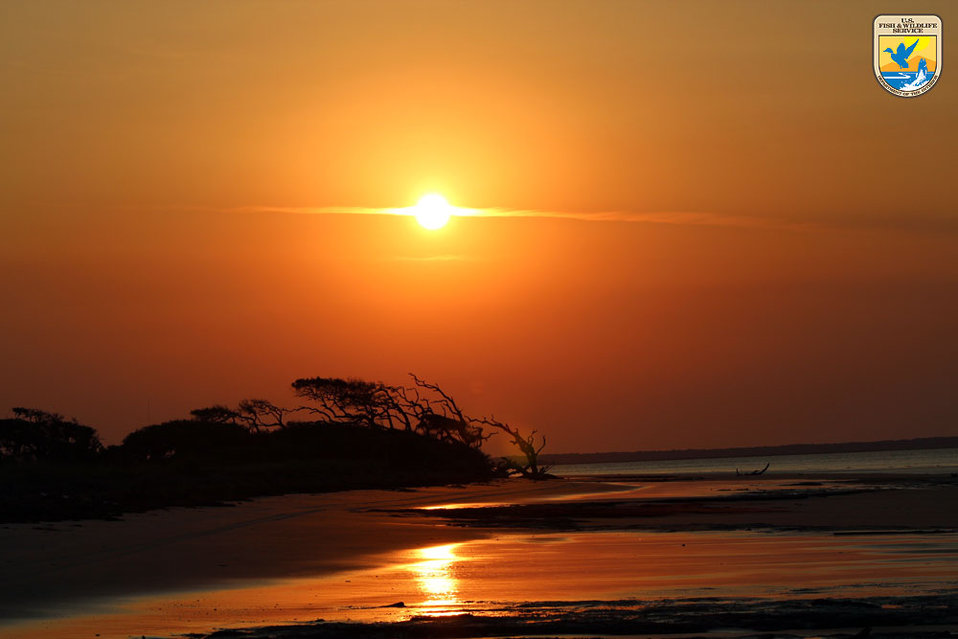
Sunset - Region 4

Sunset over the edge of Blackbeard's Boneyard Beach.